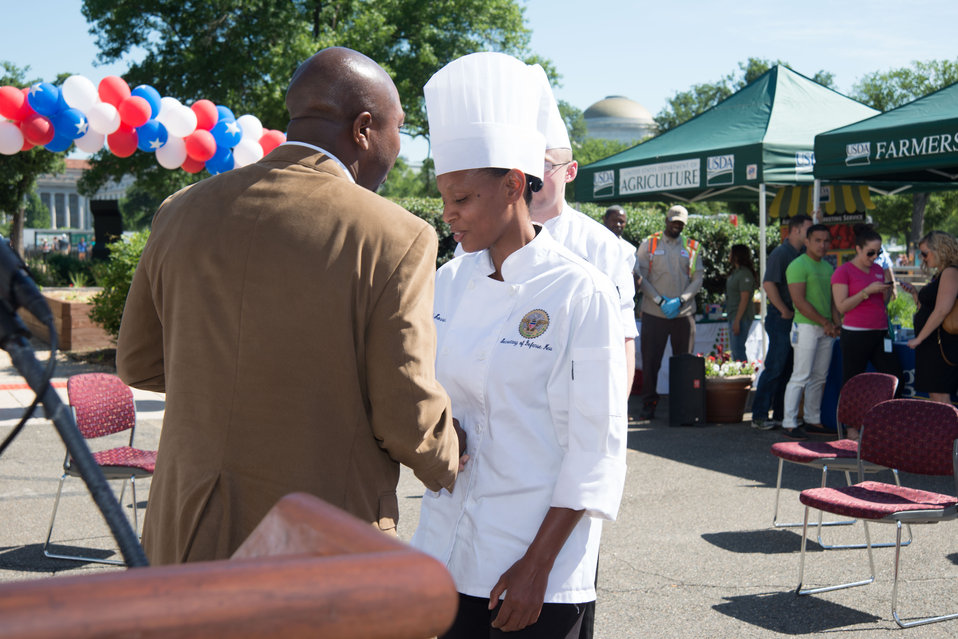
U.S. Army Sergeant (SGT) Monique Sorrell receives challenge coin from U.S. Department of Agriculture (USDA) Farm and Foreign Agricultural Service (FAS) Deputy Under Secretary Karis T. Gutter at the opening USDA’s 2014 Farmers Market in the east parking lot of USDA in Washington, D.C. on Friday, Jun. 6, 2014.